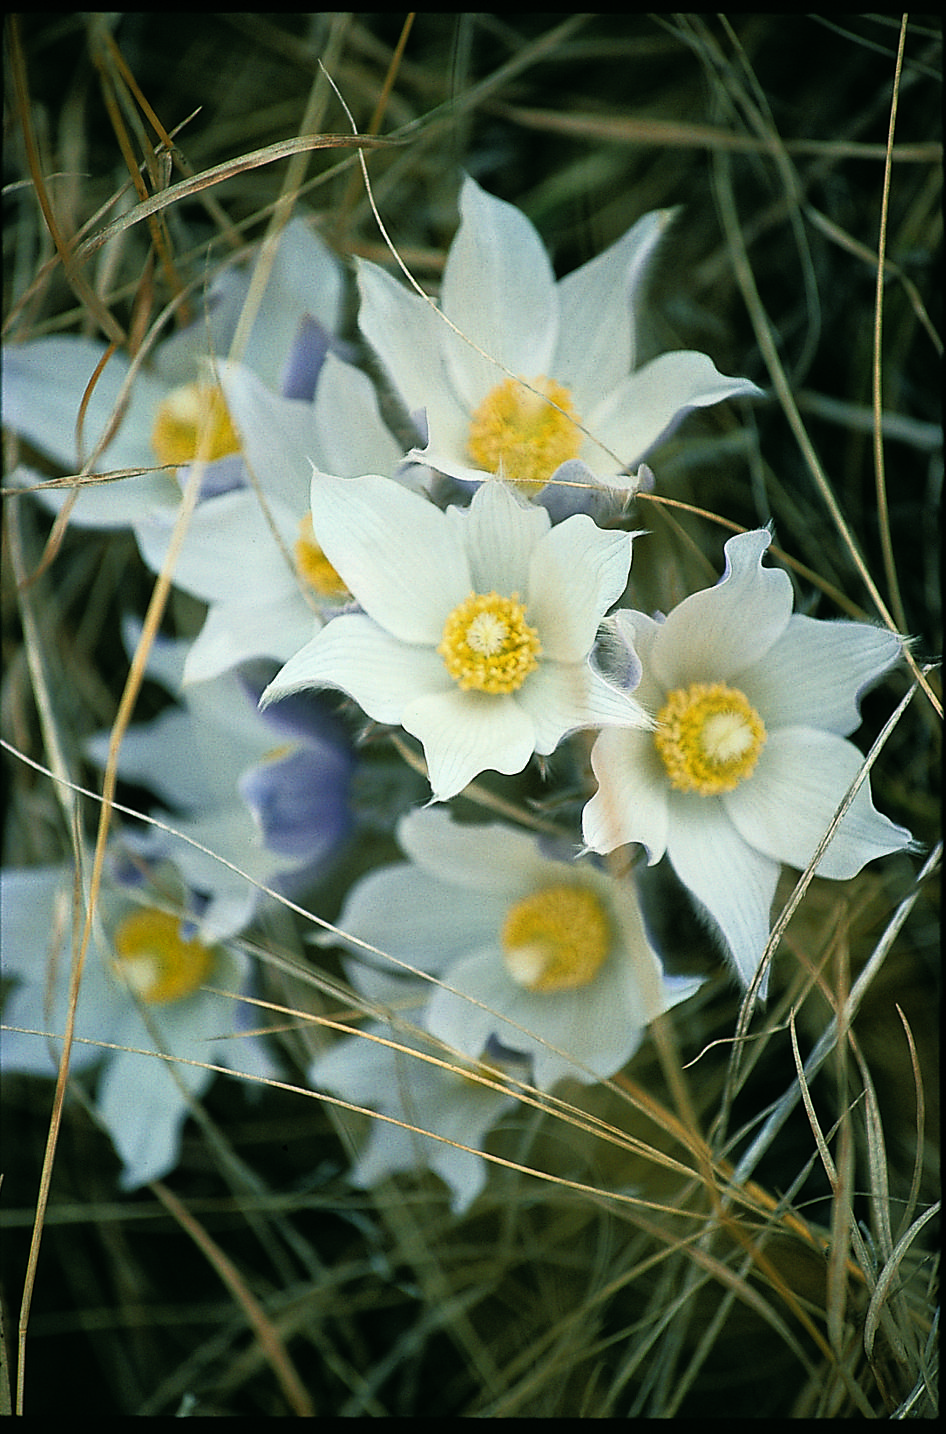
Pasque Flower (Crocus)

Jackie Jacobson/USFWS